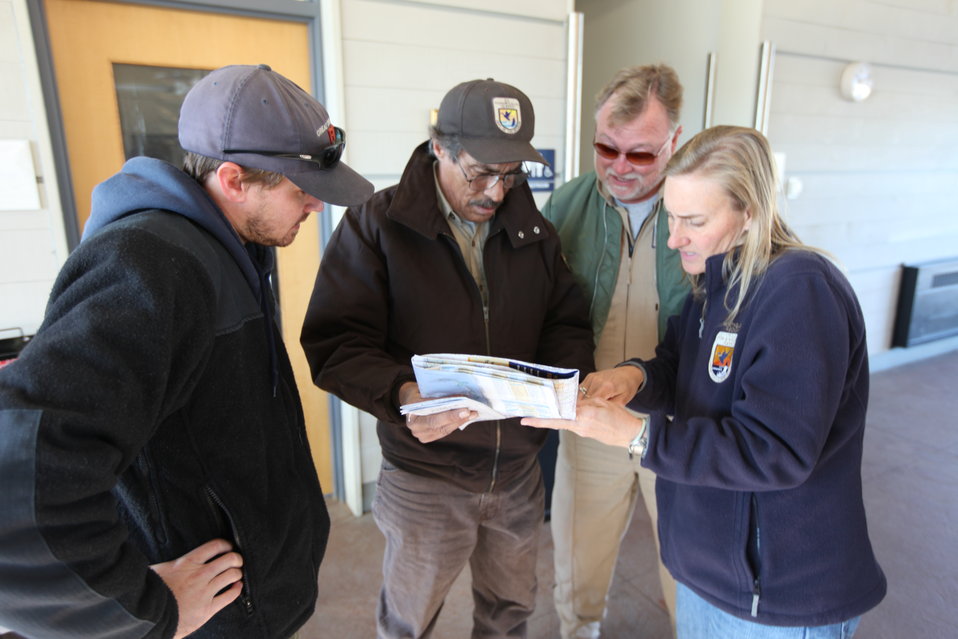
Rhode Island National Wildlife Refuge Complex Mission Plan (RI)

Refuge Manager Charlie Vandemeer and Suzanne Peyton plan the aerial survey of Rhode Island Refuges with U.S. Fish and Wildlife Service helicopter manager Kyle Krzywicki and pilot Glenn Cullingford.